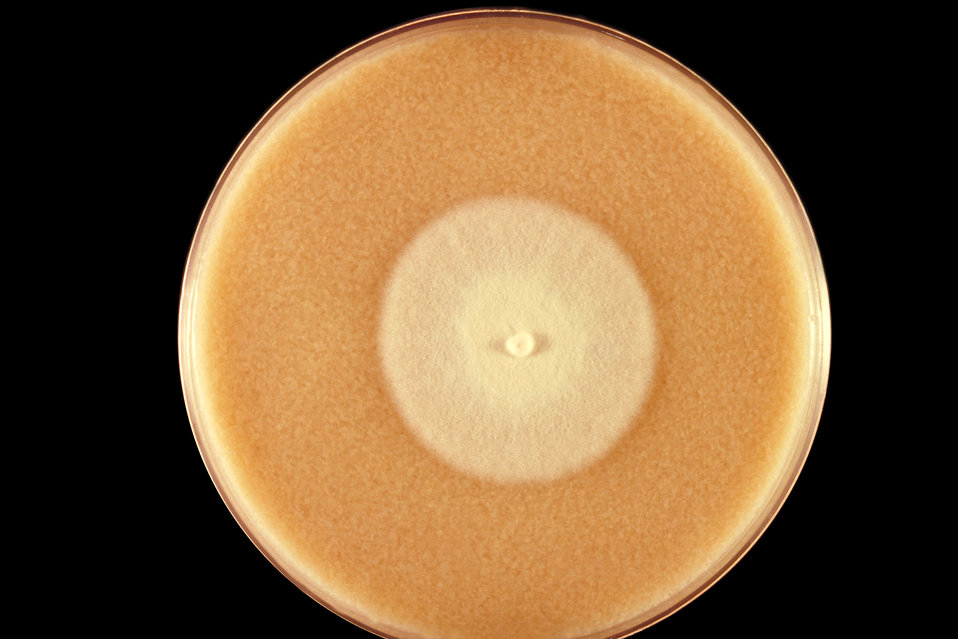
This is a top view of a cereal agar plate culture growing a colony of Microsporum persicolor fungus.